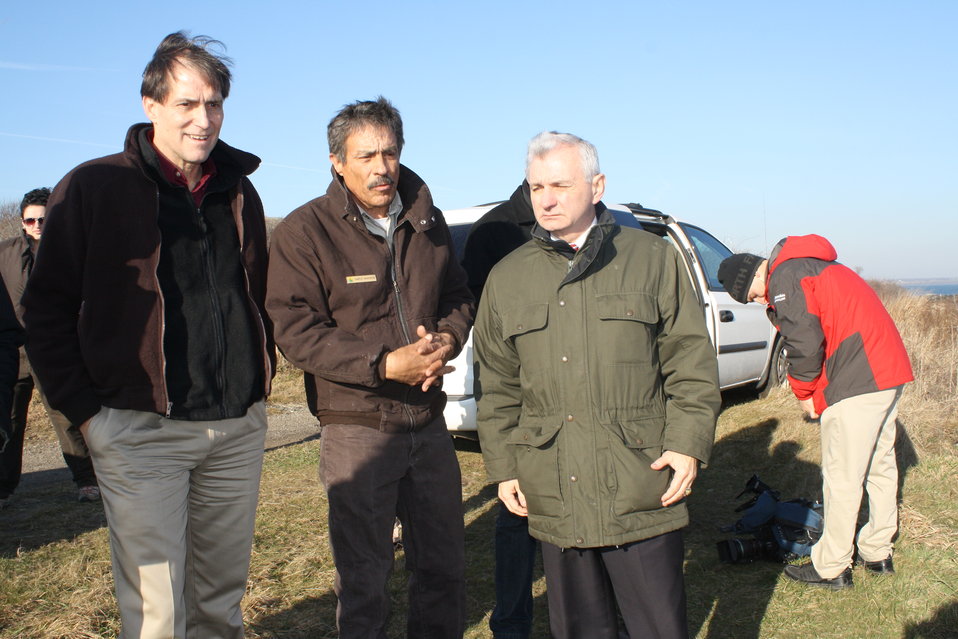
Viewing damage at Sachuest Point (RI)

U.S. Fish and Wildlife Service Director Dan Ashe, Project Leader of the Rhode Island Complex Charlie Vandemoer, and Senator Jack Reed of Rhode Island view the new Price Neck Overlook trail at Sachuest Point National Wildlife Refuge. While conducting damage assessments after Hurricane Sandy, refuge staff had to re-route the trail due to dangerous drop-offs that formed after the storm.